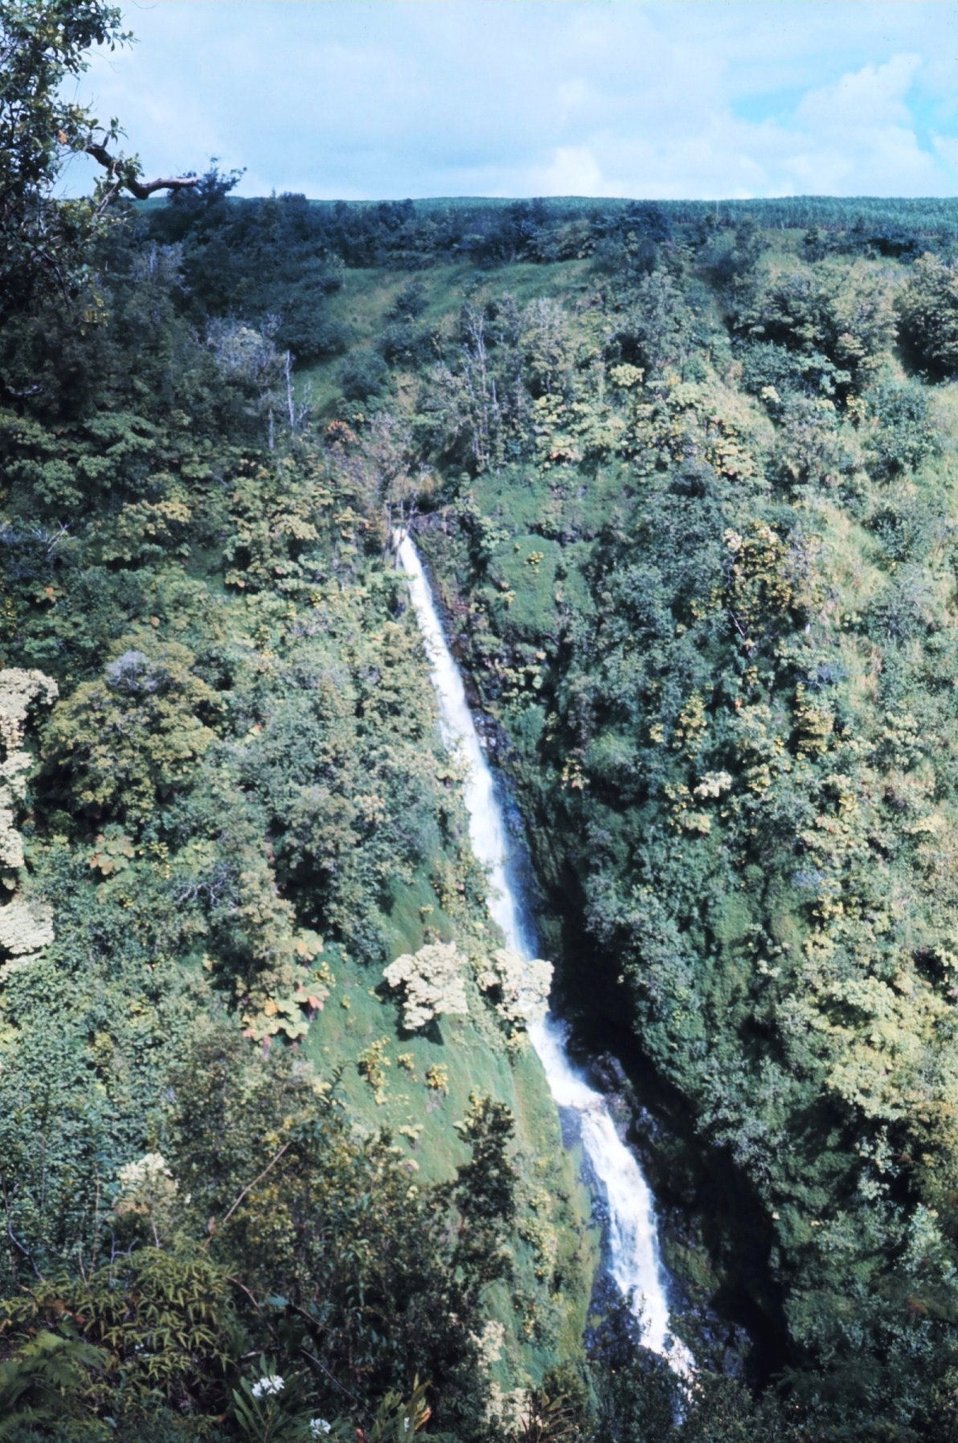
Spectacular waterfall